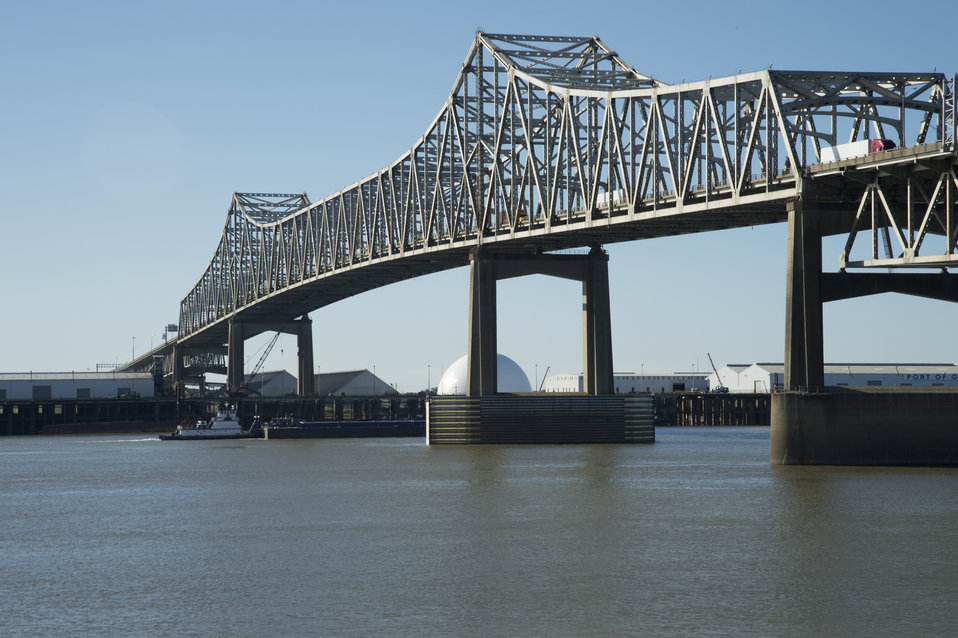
A bridge spans the Mississippi River near the port of New Orleans, LA on Tuesday, Nov. 19, 2013.